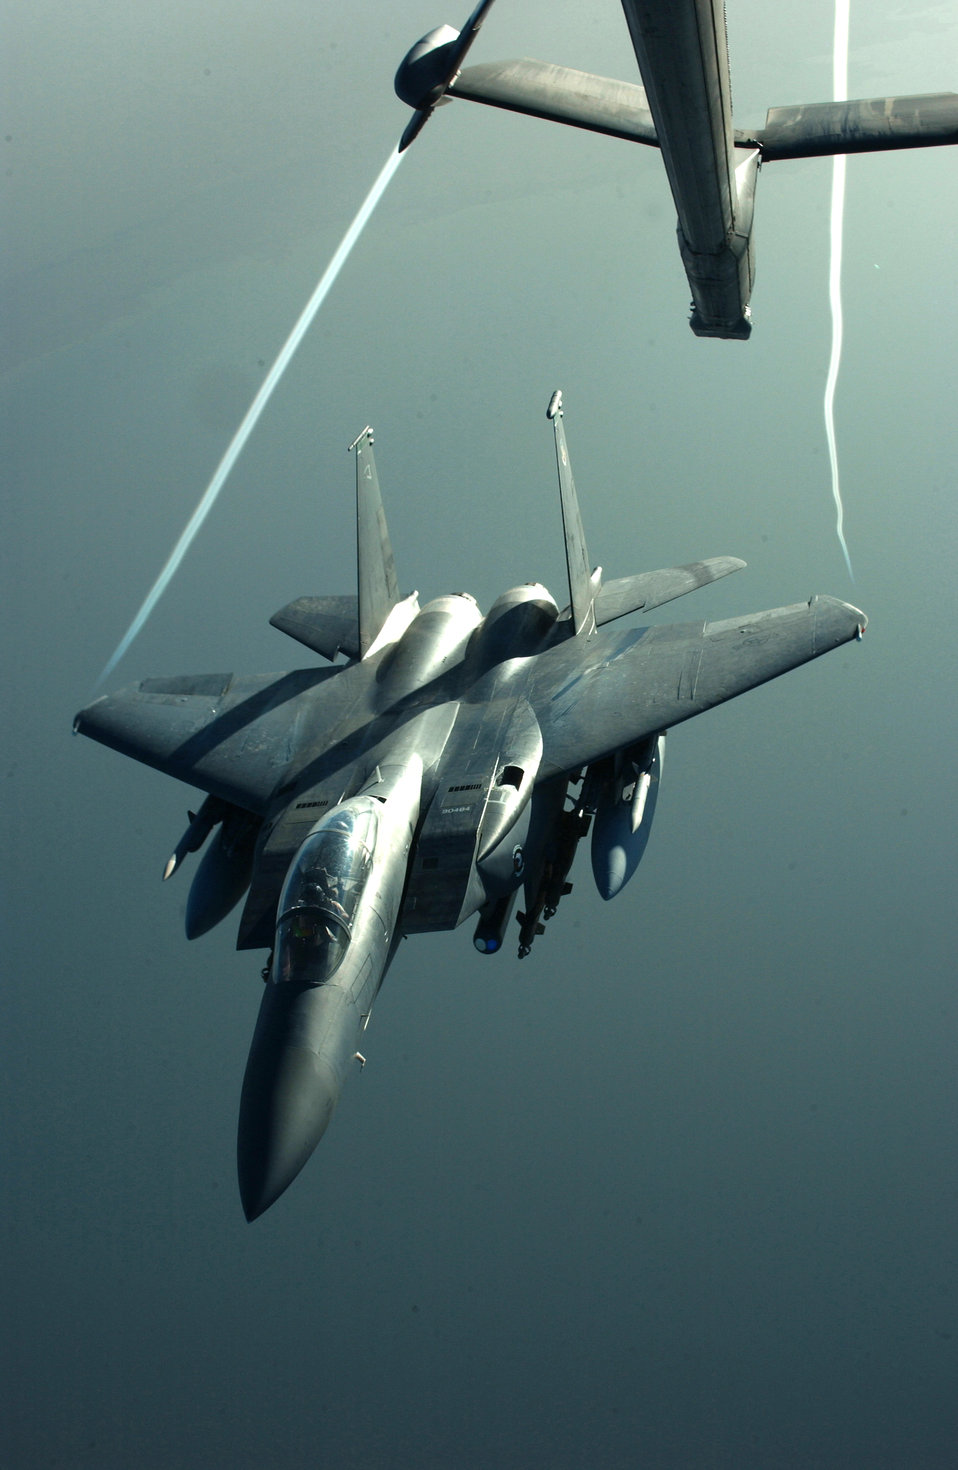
Last stop for gas

OVER IRAQ -- An F-15E Strike Eagle flies off in the early evening light after receiving fuel from a 908th Expeditionary Air Refueling Squadron KC-10 Extender during a recent mission here in support of Operation Iraqi Freedom.